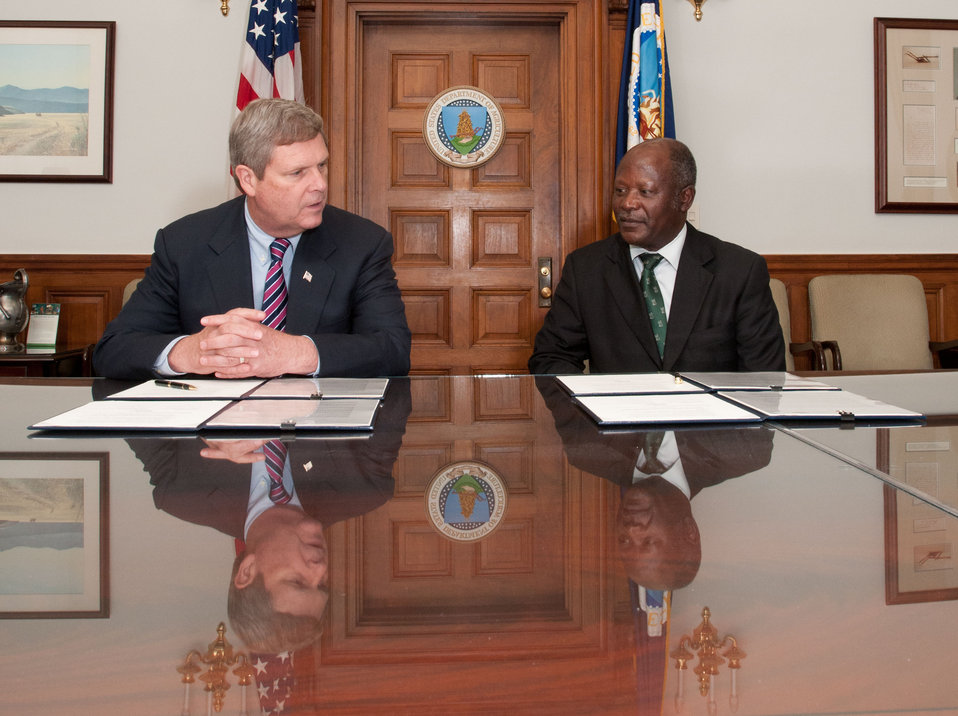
U.S. Department of Agriculture Secretary Tom Vilsack (left) spoke about the importance of food security and sustainability and how signing the Memorandum of Understanding with Alliance for a Green Revolution in Africa (AGRA) President Dr. Namanga Ngongi (right) will open opportunities and cooperation with the USDA, in Washington, DC, on Thursday, May 26, 2011. AGRA’s programs integrate seeds, soils, market access, policy and partnerships and innovative finance. The alliance strives for comprehensive changes across Africa’s agricultural system. Programs also support agricultural education and water management, and the involvement and training of youth.